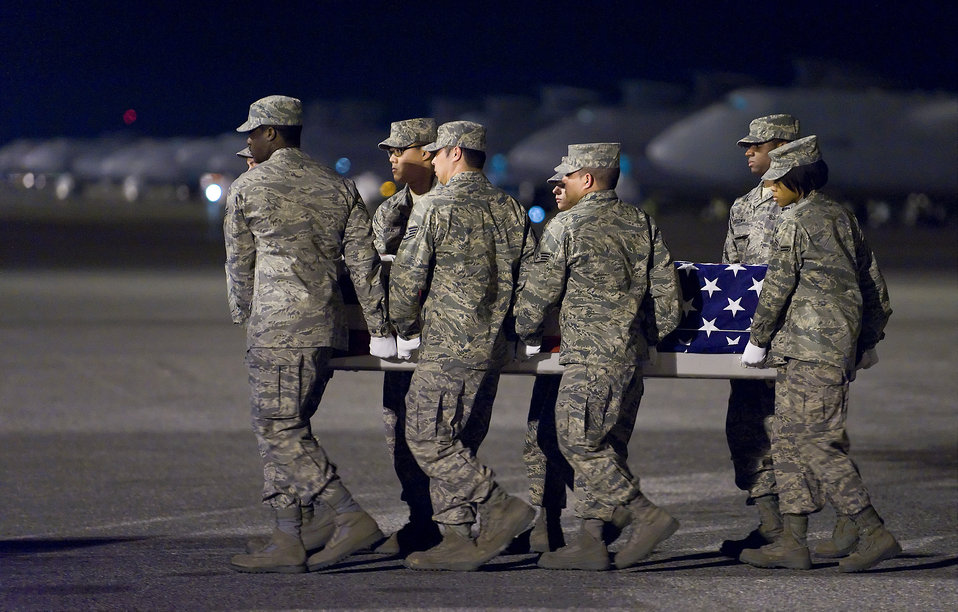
Dignified Transfers Arrive at Dover AFB

An Air Force Mortuary Affairs Operations Center carry team transfers the remains of Air Force Staff Sgt. Phillip A. Myers, of Hopewell, Va., at Dover Air Force Base, Del., April 5. Sergeant Myers died April 4 near Helmand Province, Afghanistan from wounds suffered from an improvised explosive device. He was assigned to the 48th Civil Engineer Squadron, Royal Air Force Lakenheath, United Kingdom. Sergeant Myers' family is the first to allow media to cover the dignified transfer under the new Department of Defense policy.